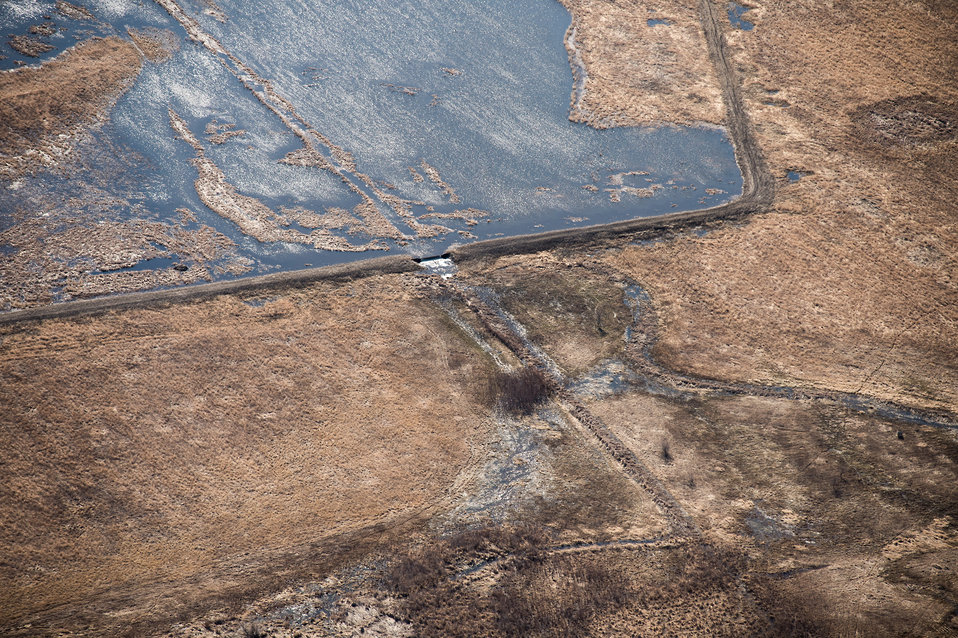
Ehlert North U.S. Department of Agriculture (USDA) Natural Resources Conservation Service (NRCS) Wetland Reserve Program (WRP) in Wilkin County, MN, on Tuesday, April 30, 2013. For information about this and other programs from the USDA Red River Basin Initiative (RRBI) please see www.mn.nrcs.usda.gov/news/features13/RRBI.html.